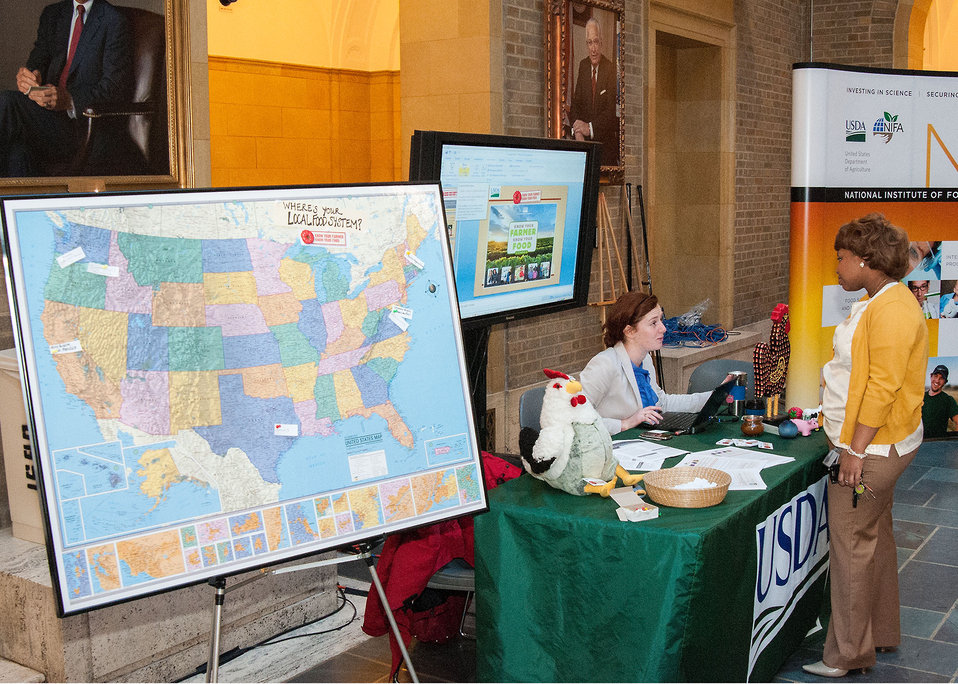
Brooke Barron (left, seated) assists Ashlee Johnson locating a farmers market at the Know Your Farmer Know Your Food exhibit at the U.S. Department of Agriculture (USDA) Open House on the National Mall, in Washington, D.C., on Friday, Jan. 18, 2013. The Open House was an opportunity to learn more about USDA’s role in agriculture, local and regional food systems, natural resource conservation, nutrition, research and rural development.